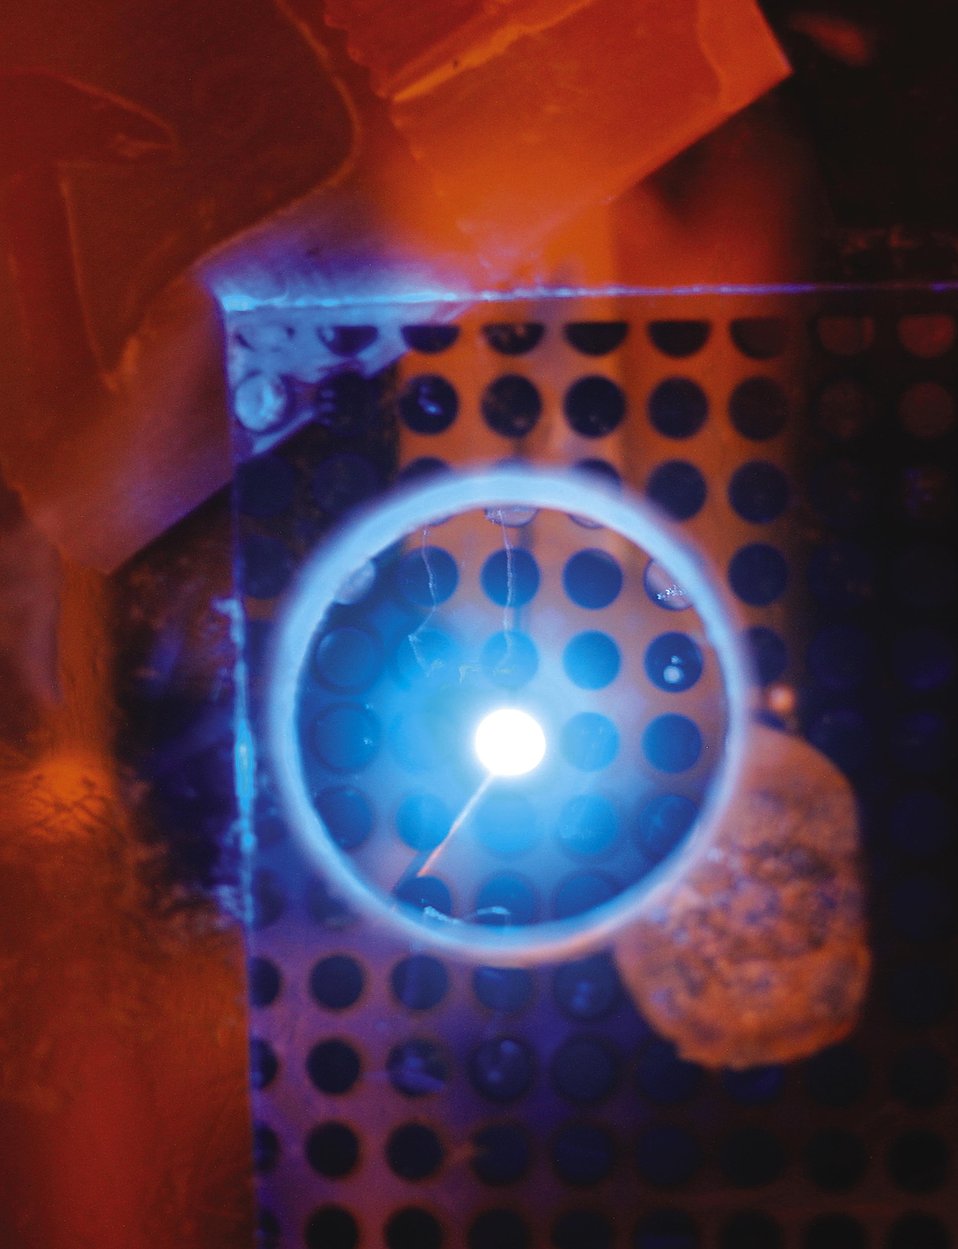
A BRILLIANT BLUE, ORGANIC LIGHT-EMITTING DEVICE (OLED) DEVELOPED AT AMES.

OLEDS ARE USED AS LIGHT SOURCES FOR FLOURESCENT SENSORS MADE BY SCIENTISTS AT AMES IN COLLABORATION WITH SCIENTISTS AT THE UNIVERSITY OF MICHIGAN, ANN ARBOR. THEIR COMBINED RESEARCH EFFORTS HAVE RESULTED IN THE CREATION OF AN INTEGRATED OLED/OPTICAL CHEMICAL SENSOR IN WHICH THE DETECTOR AND THE LIGHT SOURCE THAT EXCITES THE FLOURESCENCE ARE INTEGRATED WITH THE SENSOR FILMS.